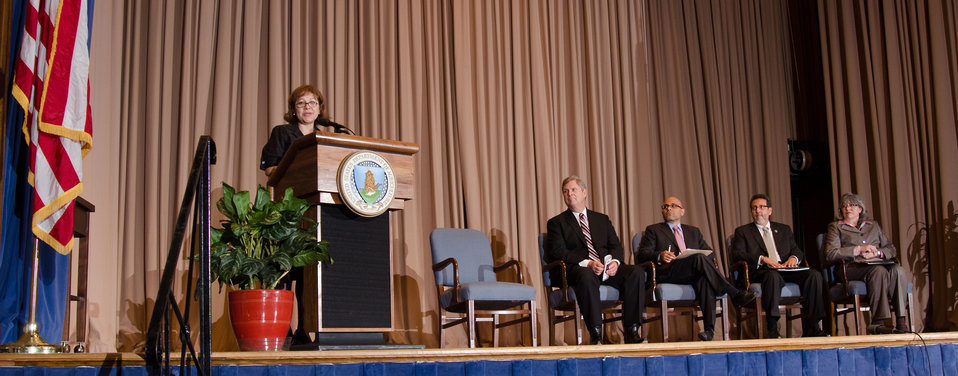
Tammye Trevino, the Administrator of USDA Rural Development’s Housing and Community Facilities programs (left) introduced Agriculture Secretary Tom Vilsack (right) during the National Hispanic Heritage Month observance at the United States Department of Agriculture's (USDA) Jefferson Auditorium in Washington, D.C. on Thursday, September 15, 2011.